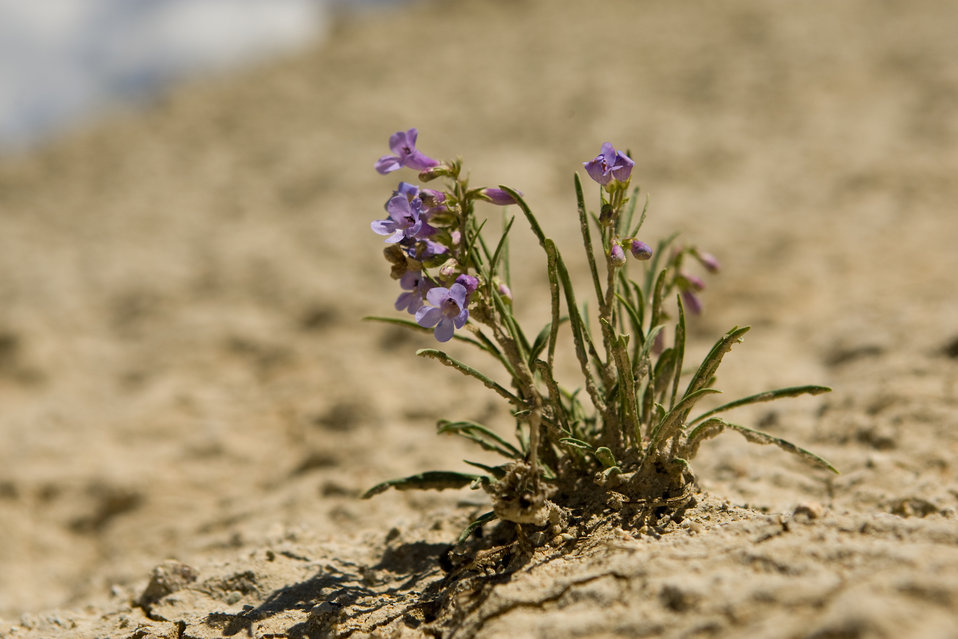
Colorado Rare Plant Conservation Initiative

The Colorado Rare Plant Conservation Initiative (RPCI) is a partnership of 23 statewide and regional agencies, private organizations, and academic institutions working to conserve 121 rare plants in Colorado. As part of these efforts the group developed the Colorado Rare Plant Conservation Strategy, developed Best Management Practices to reduce energy development impacts, addressed climate change, and developed focused strategies for the conservation of individual species at eight priority landscapes. The group has also worked to coordinate volunteer efforts for plant conservation across the state.